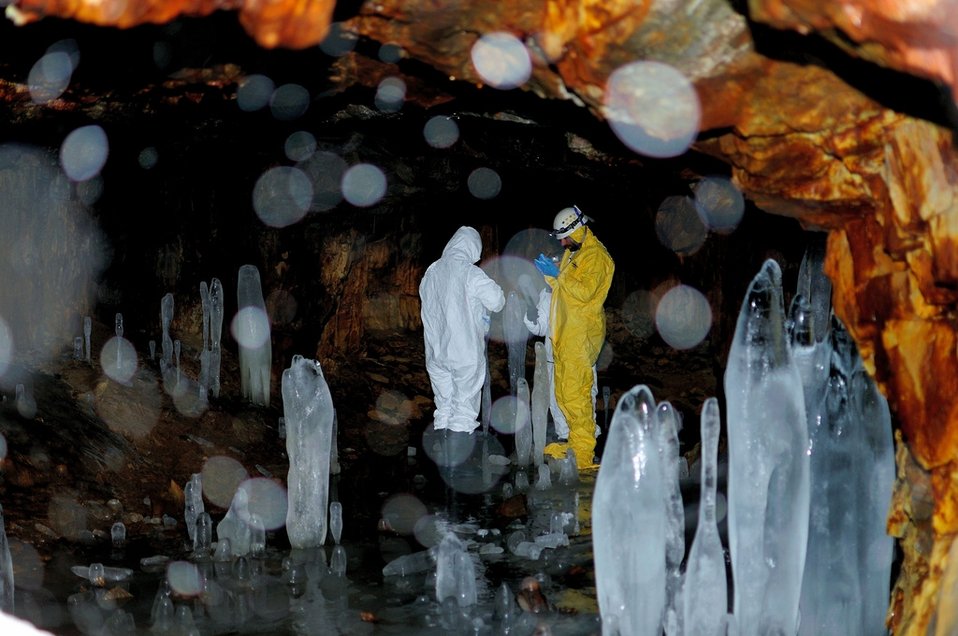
Survey in Maine mine

Maine Department of Inland Fisheries and Wildlife wildlife biologist survey a cave in Oxford County, Maine, for white-nose syndrome. The disease was confirmed to be present on bats from that location.